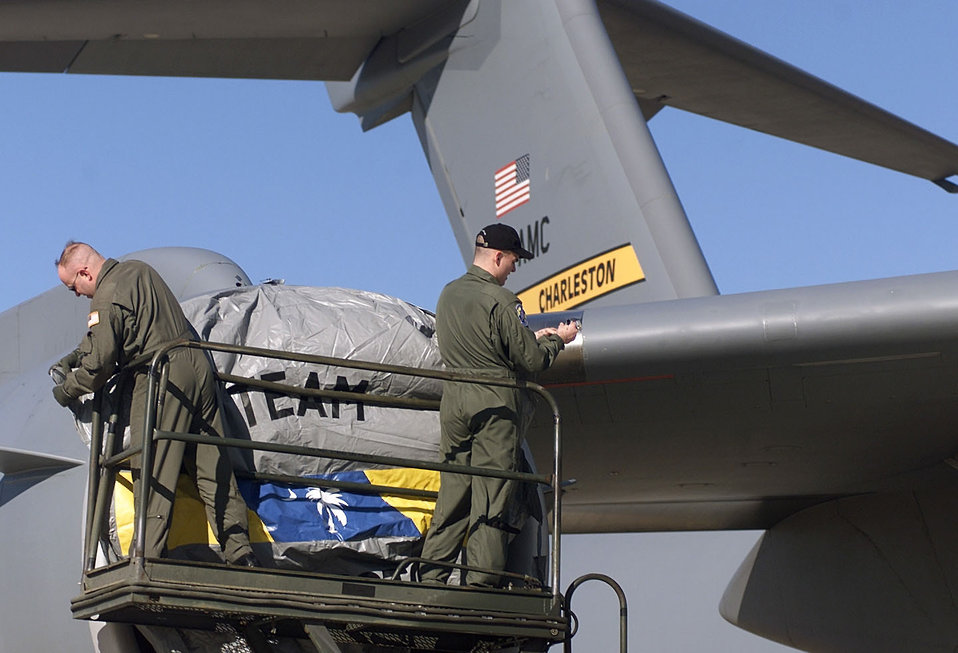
C-17 display

MACDILL AIR FORCE BASE, Fla. -- Staff Sgt. Mark Henriquez (left) and Senior Airman Chad McCollum place an engine cover on a Charleston based C-17 Globemaster. Both Henriquez and Collum are deployed here as part of a week of events leading up to Superbowl XXXV.